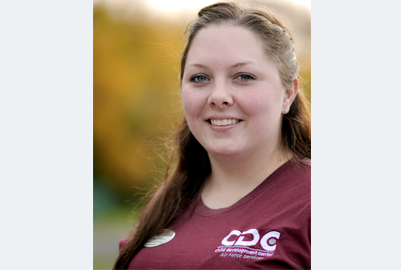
CDC professional saves infant's life

Lindsey Gren used rescue breaths to help save the life of a 3-week-old baby at the commissary at Spangdahlem Air Base, Germany. Ms. Gren is a child development center education technician at Spangdahlem AB.